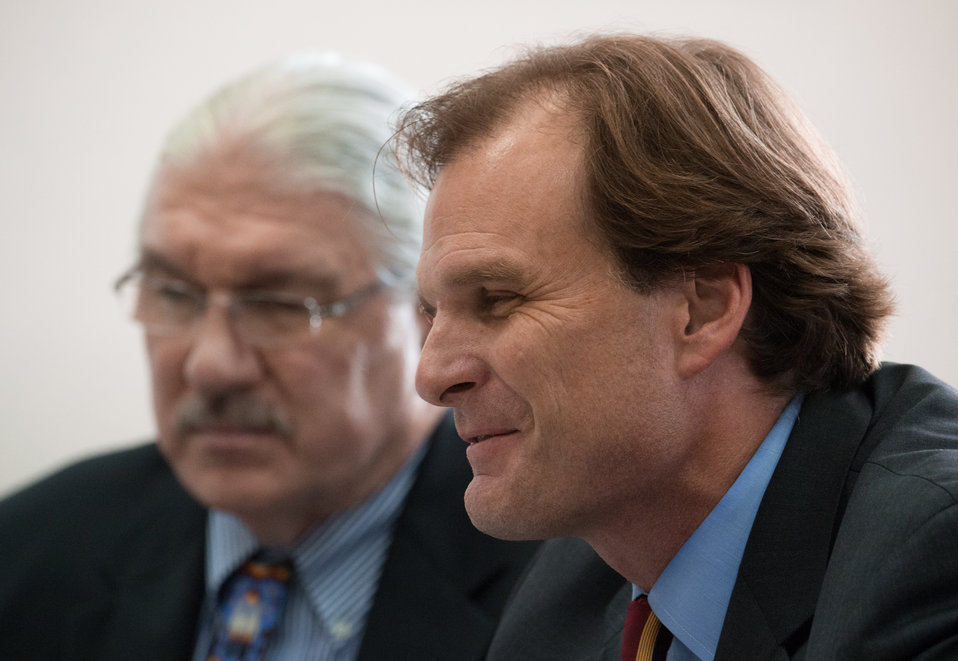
U.S. Department of Agriculture (USDA) Under Secretary for Natural Resources and Environment (NRE) Robert Bonnie and Under Secretary Butch Blazer, left, and other USDA leaders meet with The People’s Republic of China Ministry of Agriculture delegation at the USDA headquarters Whitten Building, in Washington, D.C., on Friday June 13, 2014.